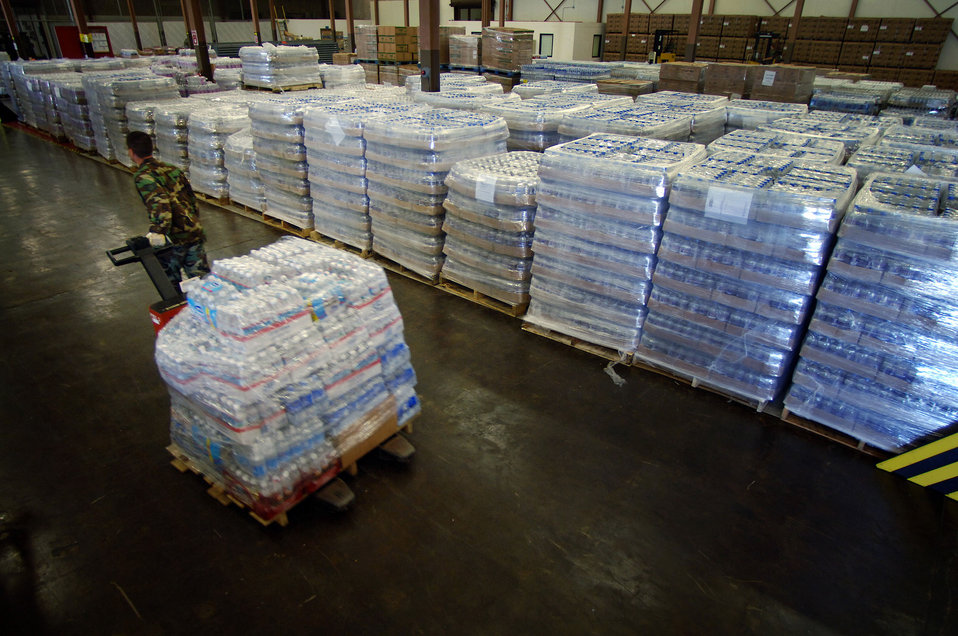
Keesler commander: Don't count us out

KEESLER AIR FORCE BASE, Miss. -- An Airman here moves a pallet of water that will be used for hurricane humanitarian aid and relief in the local community.